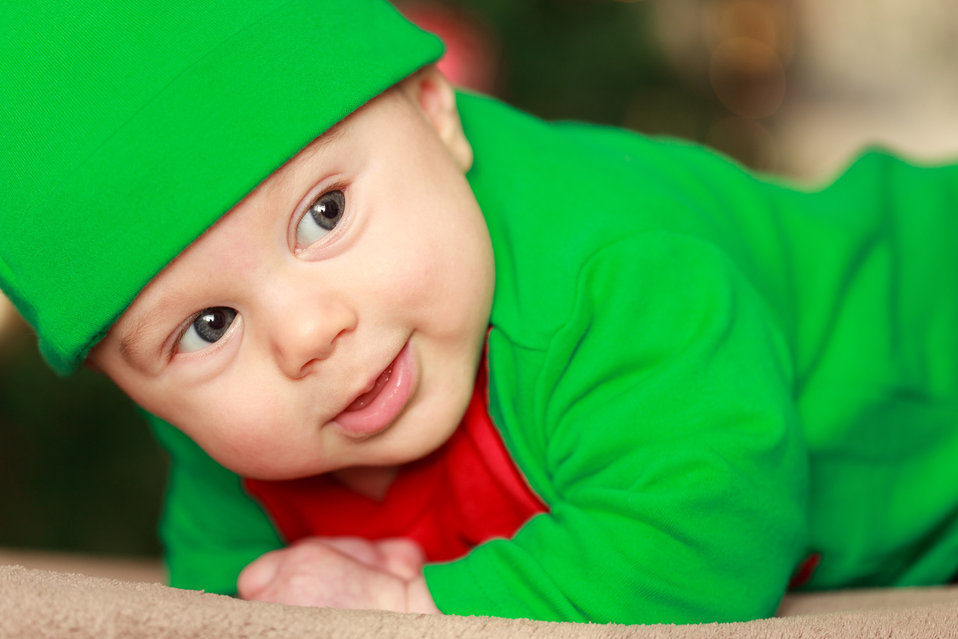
Cute baby elf lying down.